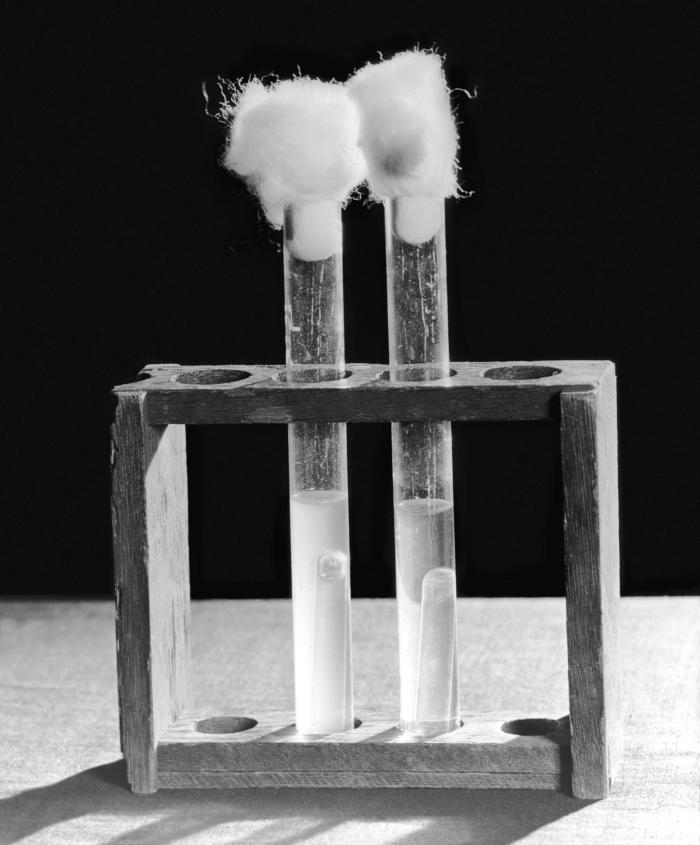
This historic 1931 photograph showed some of the equipment used by public health laboratories, in order to analyze water samples. Pictured were two test tubes in which tests were done for the presence of Balantidium coli parasites in samples of suspected water. The method involved using broth culture and gas formation to detect B. coli.